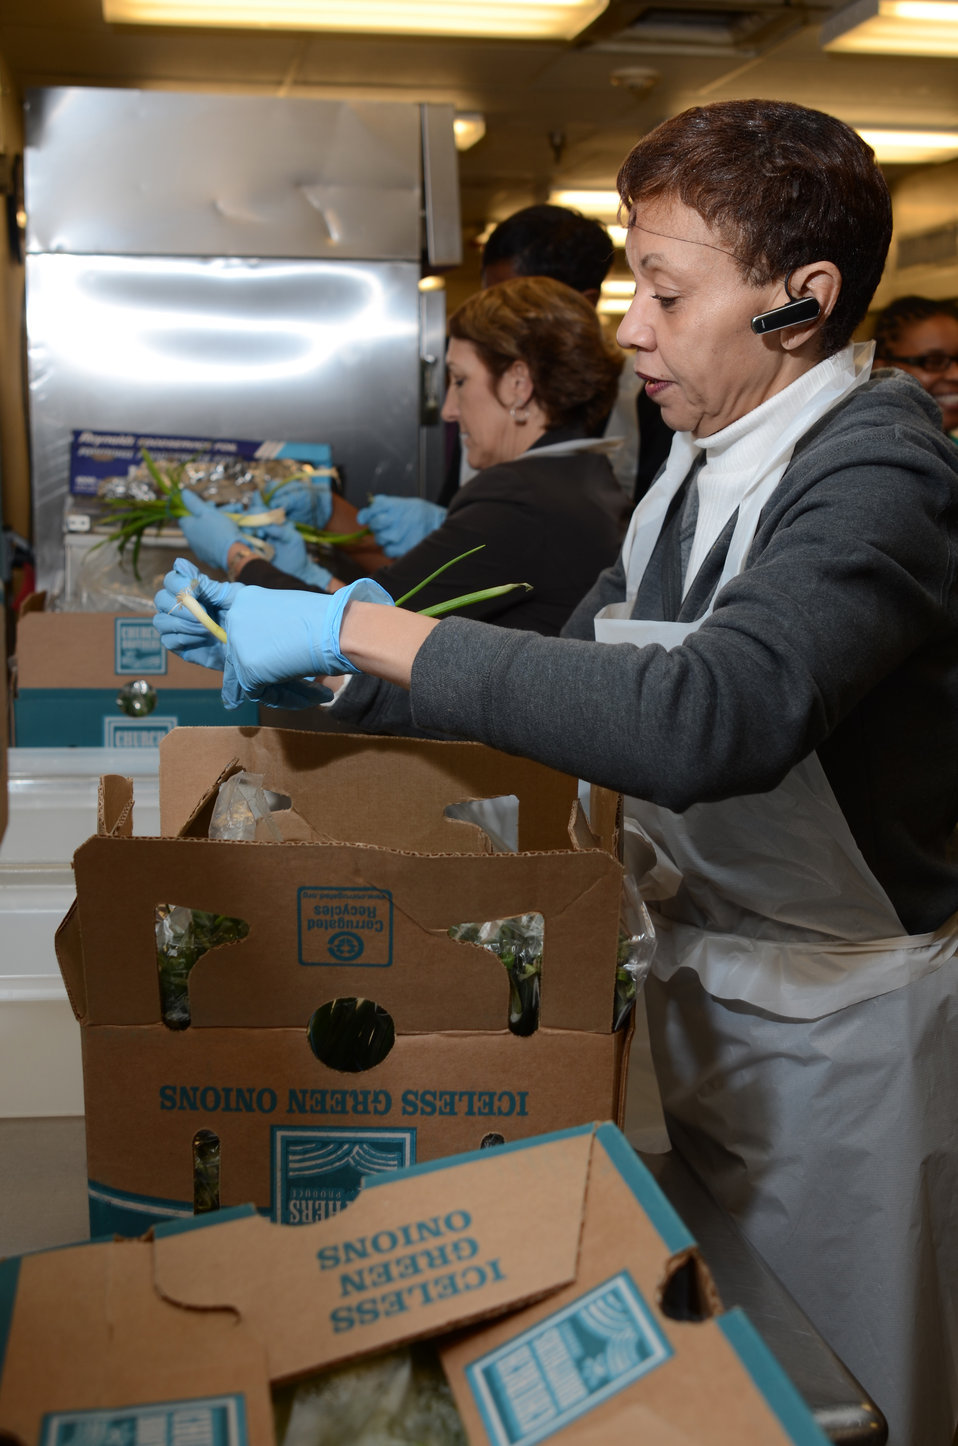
Lennetta Elias, Office of the Chief Financial Officer helps prepare the evening meal at the D.C. Central Kitchen during USDA’s National Service Day on January 12, 2012. NSD honors Dr. Martin Luther Kings’s contributions to the Civil Rights Movement. The D.C. Central Kitchen turns leftover food into millions of meals for thousands of at-risk individuals while offering nationally recognized culinary job training to once homeless and hungry adults.